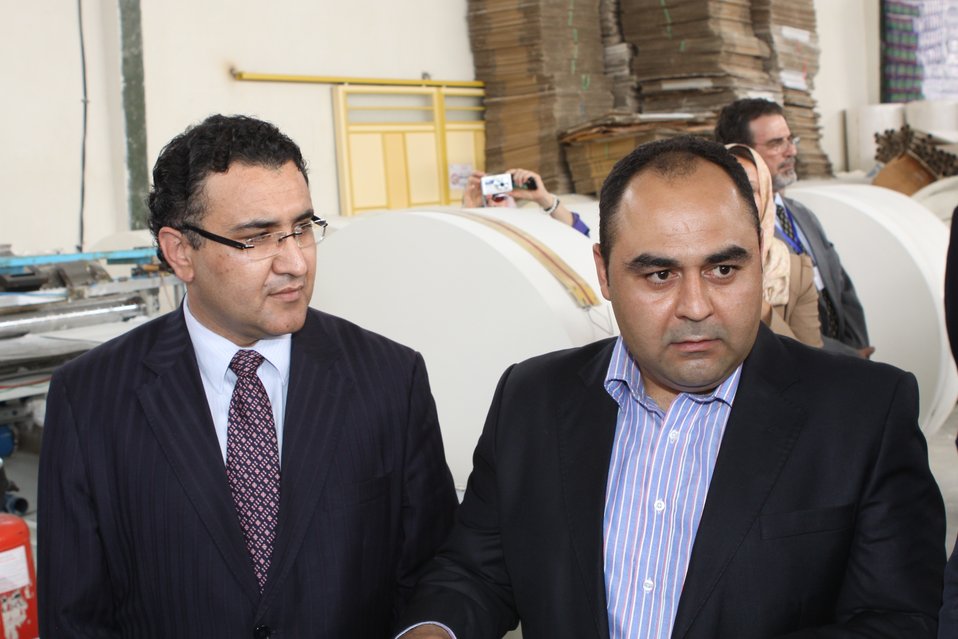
100525 Hirat Marble Conference 814